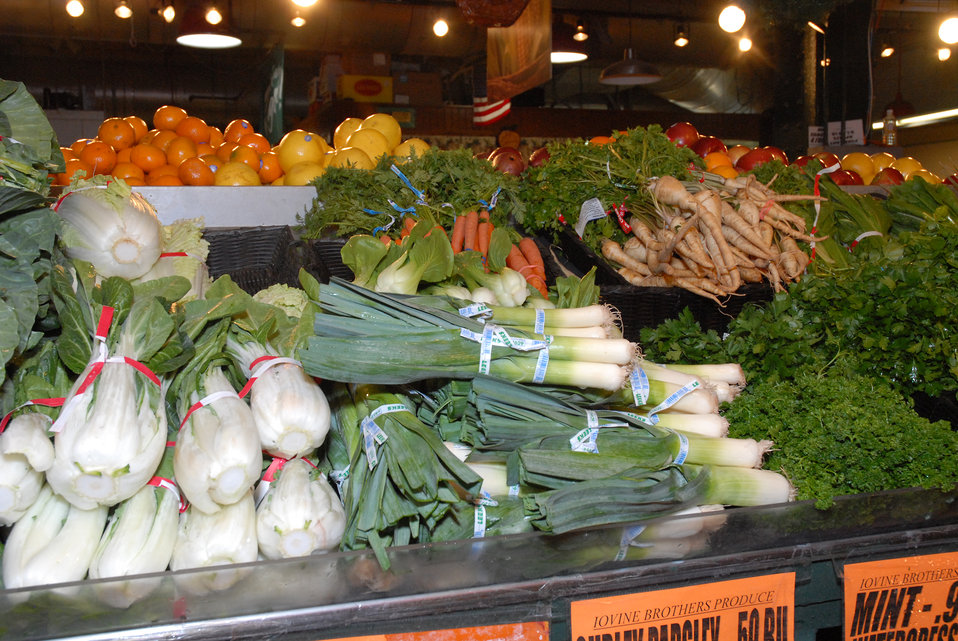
The Reading Terminal Market offers produce fresh from the field to the people of Philadelphia, Pennsylvania on March 26, 2007. There are Amish specialties, fruits, vegetables, meats, seafood, and poultry. Reading Terminal Market opened for business in 1892 with approximately 78,000 square feet and almost 800 spaces for vendors. The Market was revitalized in the 1990’s and today is still the gastronomic bazaar that its original planners had envisioned. Many of the historic Market stands survived the reconstruction and are once again filled with local produce, fresh eggs, milk, meats, poultry, seafood, handmade crafts, jewelry, and clothing. The Market is home to more than 80 merchants, two of whom are descendants of the original stand holders from a century before.